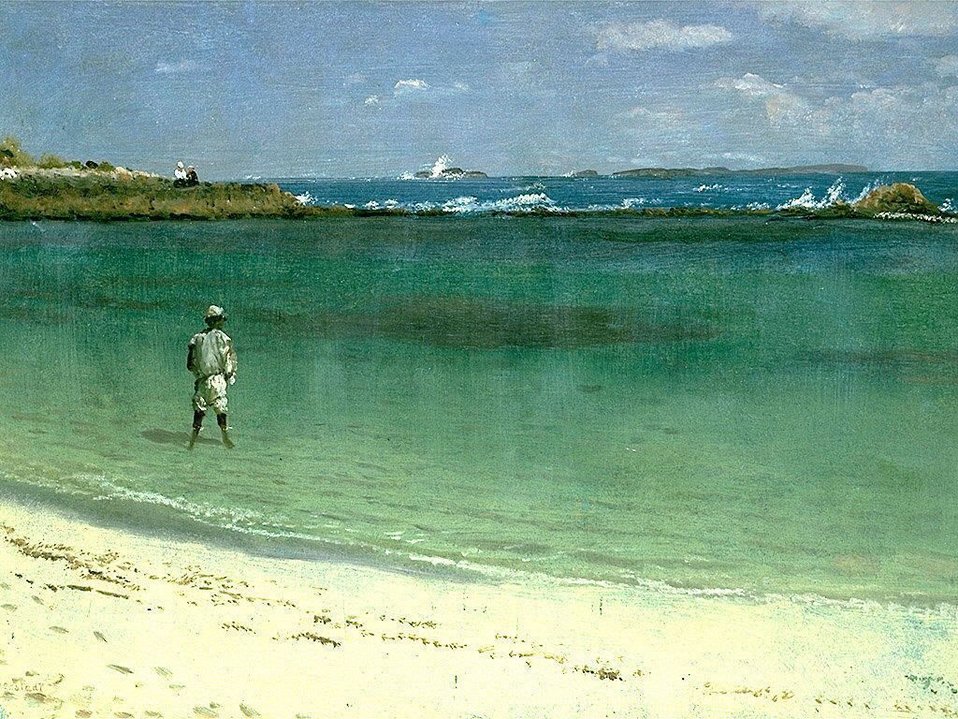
Albert Bierstadt - West Indies Coast Scene